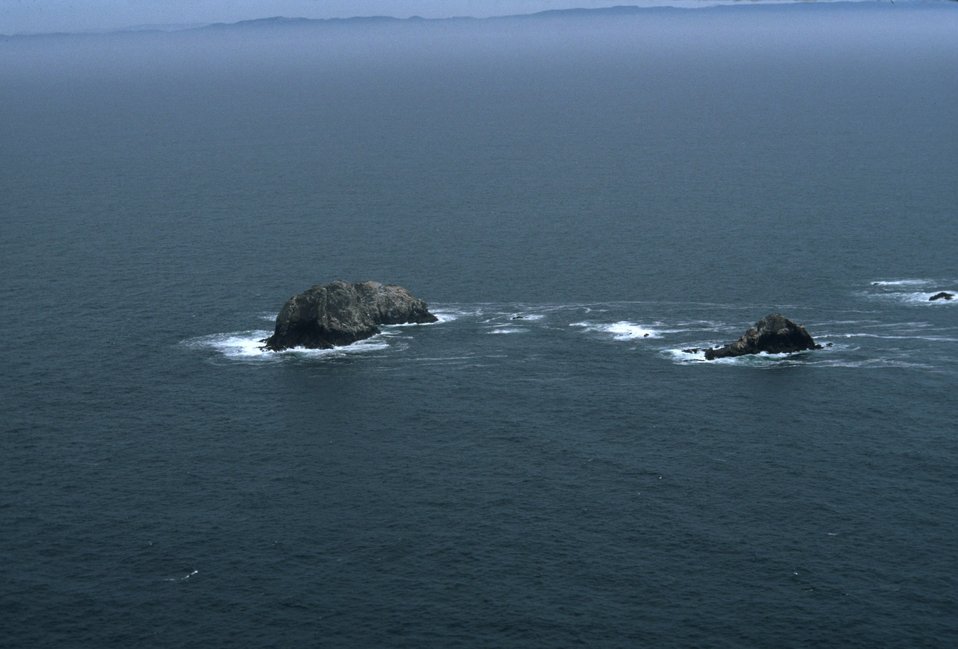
Aerial views of the wind-swept sea-swept Farallons, a virtual wilderness less than thirty miles from downtown San Francisco. Photo #10.